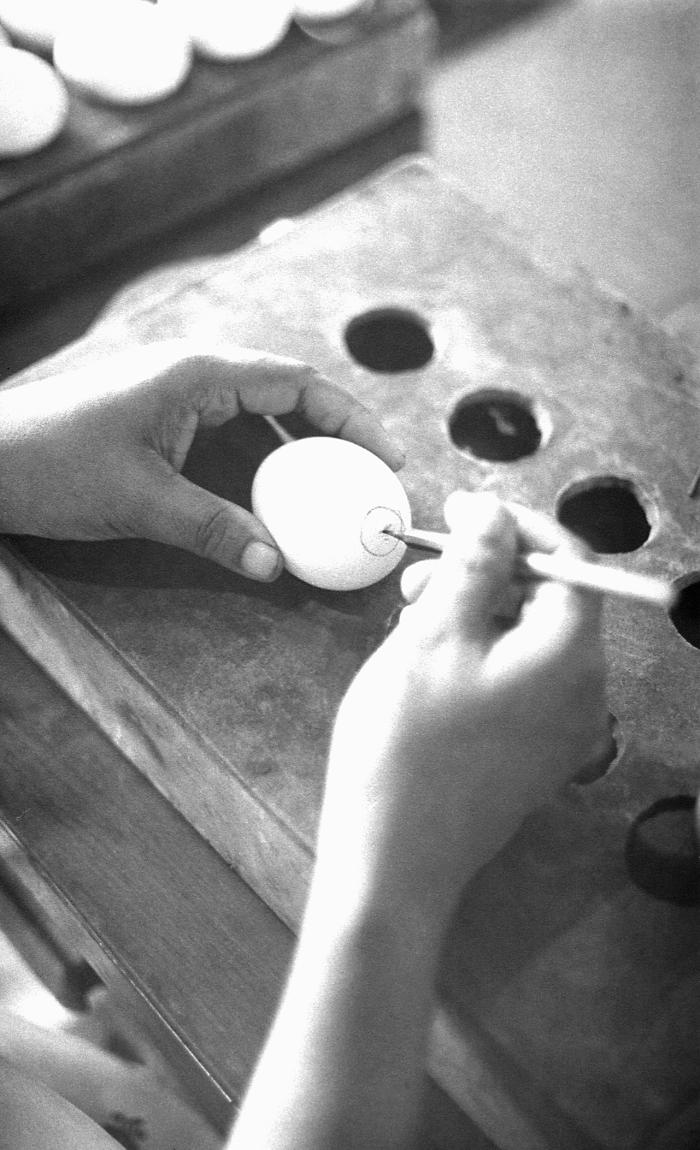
This image depicting a technician in a Bangladesh laboratory in the process of preparing an embryonated chicken egg, which will receive an injection of vaccinia virus, was taken by Dr. Stan Foster, EIS, Officer, Class of 1962, while he was part of the worldwide Global Smallpox Eradication Campaign of the late 1960s, early 1970s. Cells derived from embryonated chicken eggs (especially chicken embryo fibroblasts) have been used in preparing many safe biological products, including vaccines.